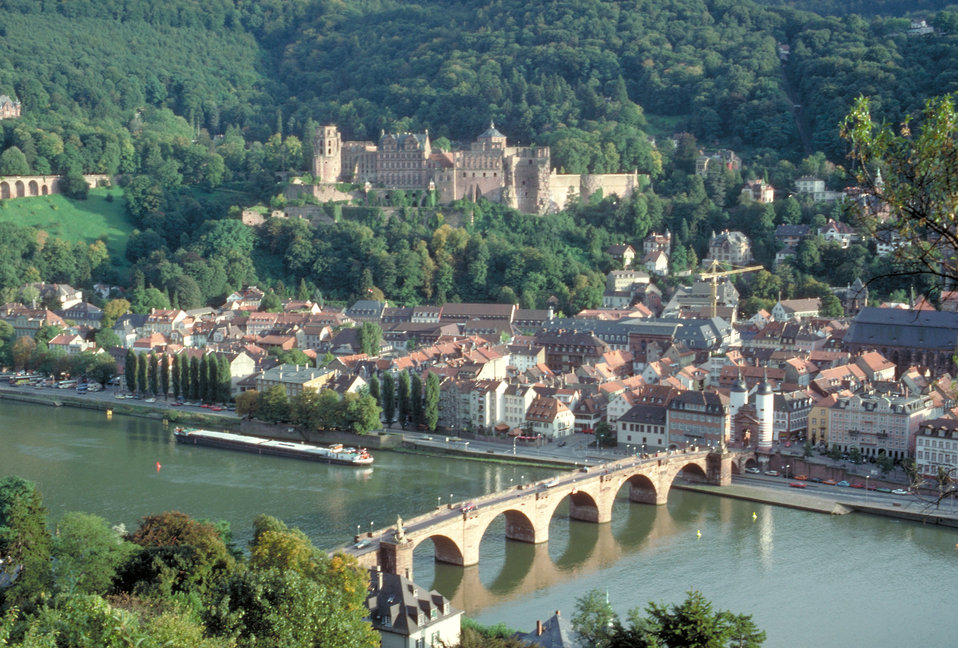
View of Heidelberg, Germany